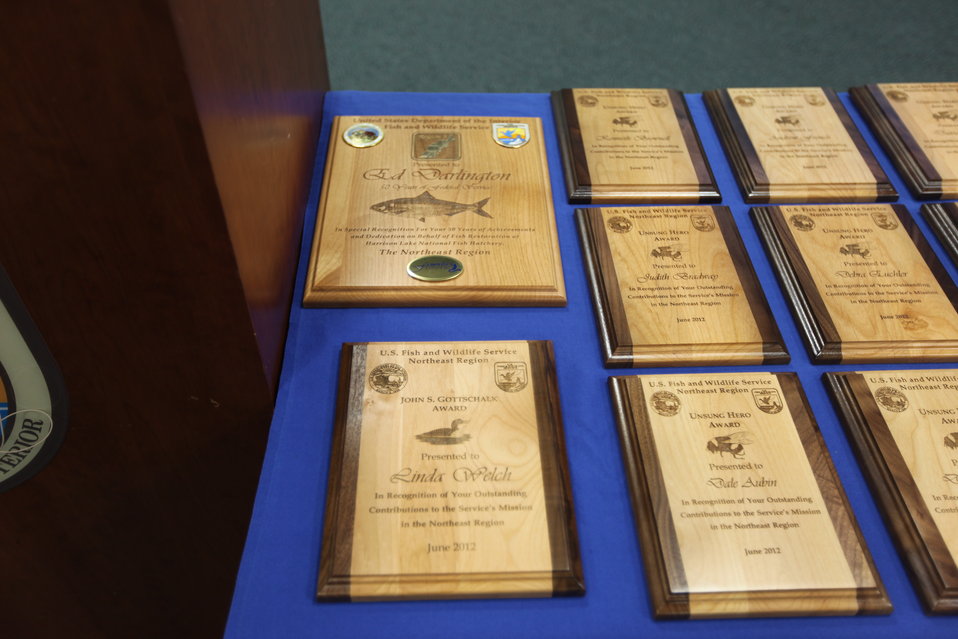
Northeast Region Employee Appreciation Awards